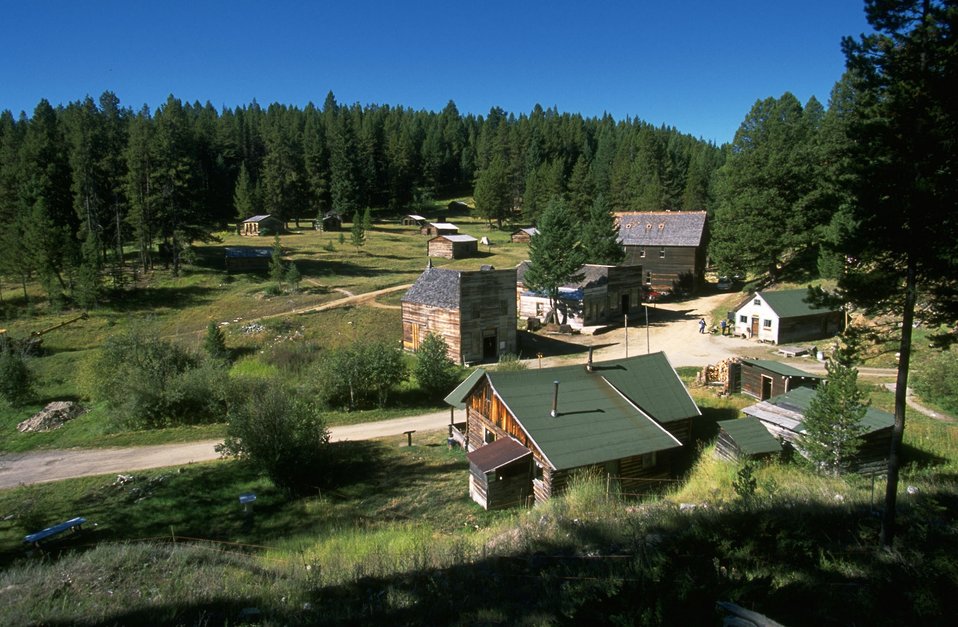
Garnet Ghost Town from overlook